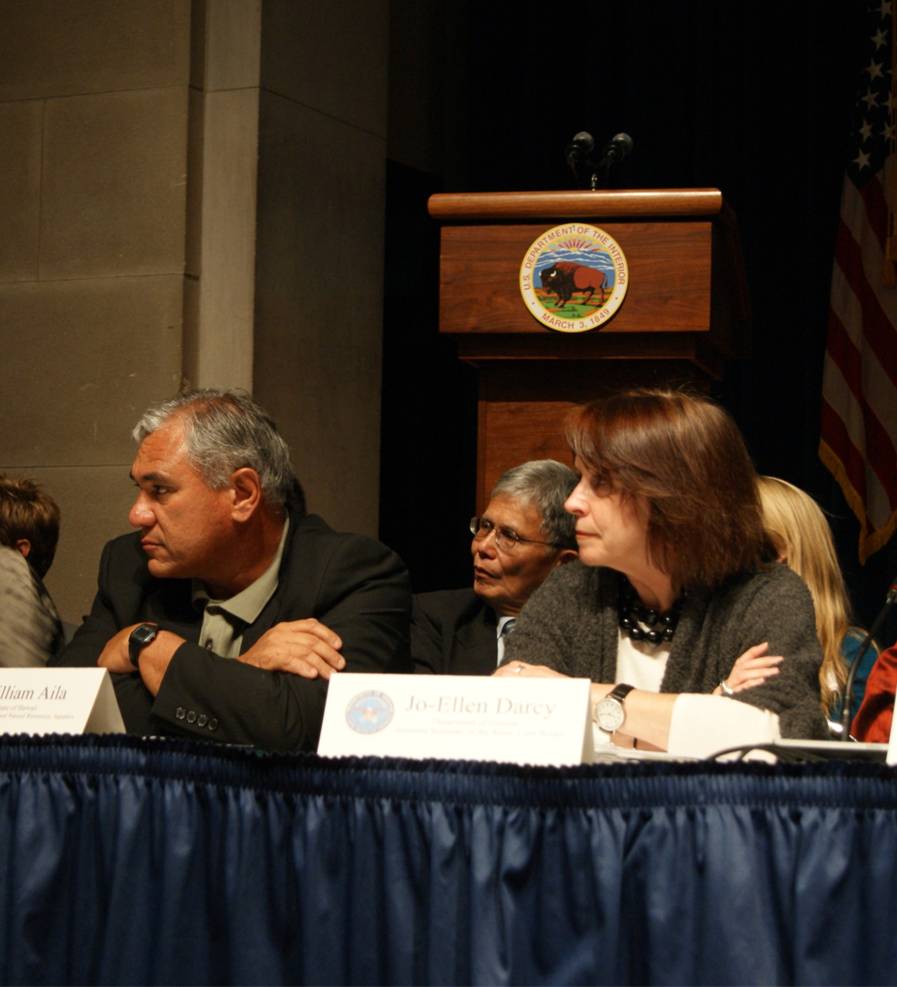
Coral Reef Task Force - Winter Meeting 2012